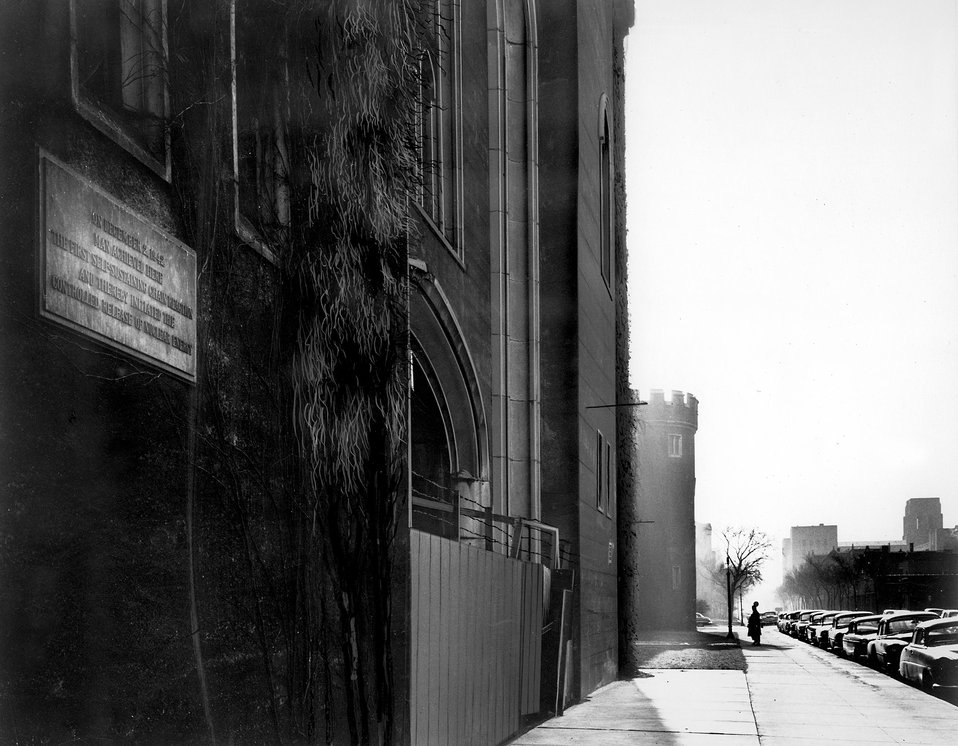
Stagg Field, University of Chicago, circa 1957.